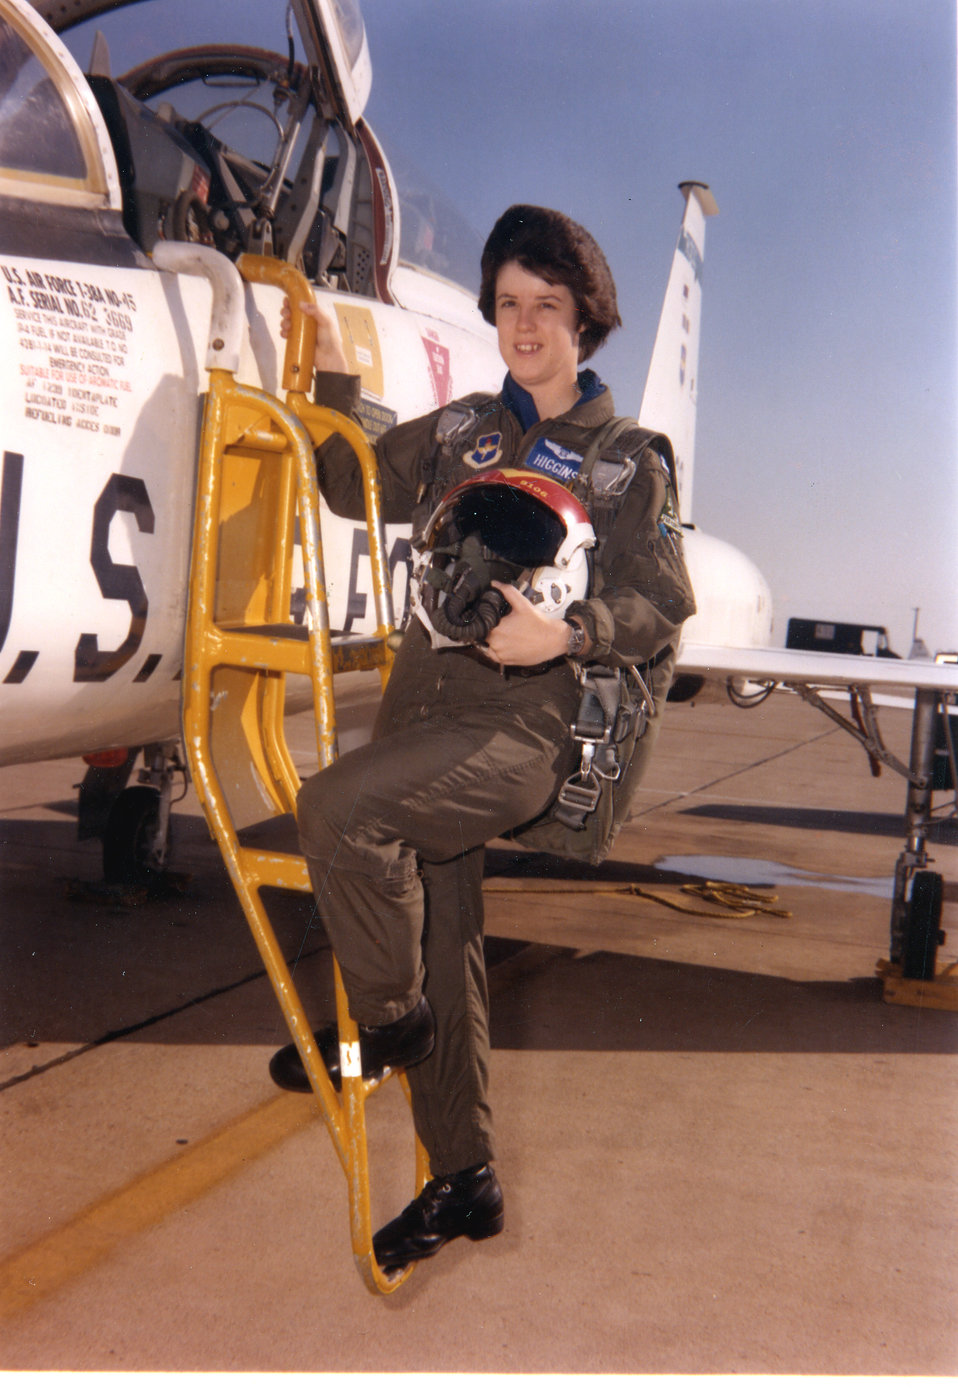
Colonel Mary Kay Higgins

REESE AIR FORCE BASE, Texas (AFPN) -- As a captain in 1980, Mary Kay Higgins became one of the first women to earn both pilot and navigator ratings. Scheduled to retire June 1, Colonel Higgins is currently chief of the operations and plans division in the office of the Air Force Reserve at the Pentagon.